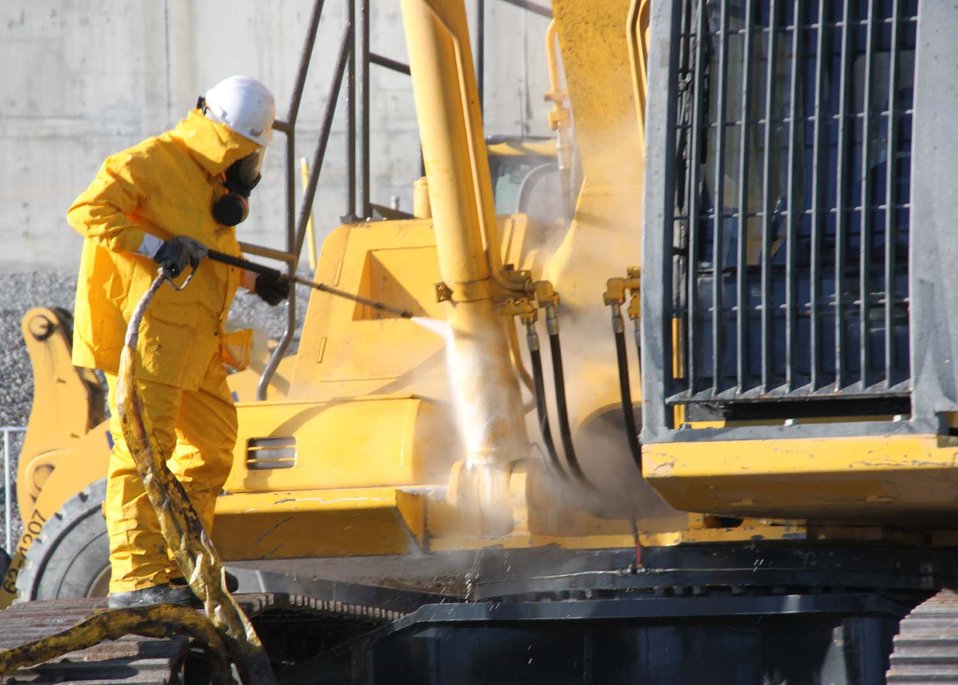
Ancillary equipment decontamination

Recovery Act-funded work at the Hanford site.